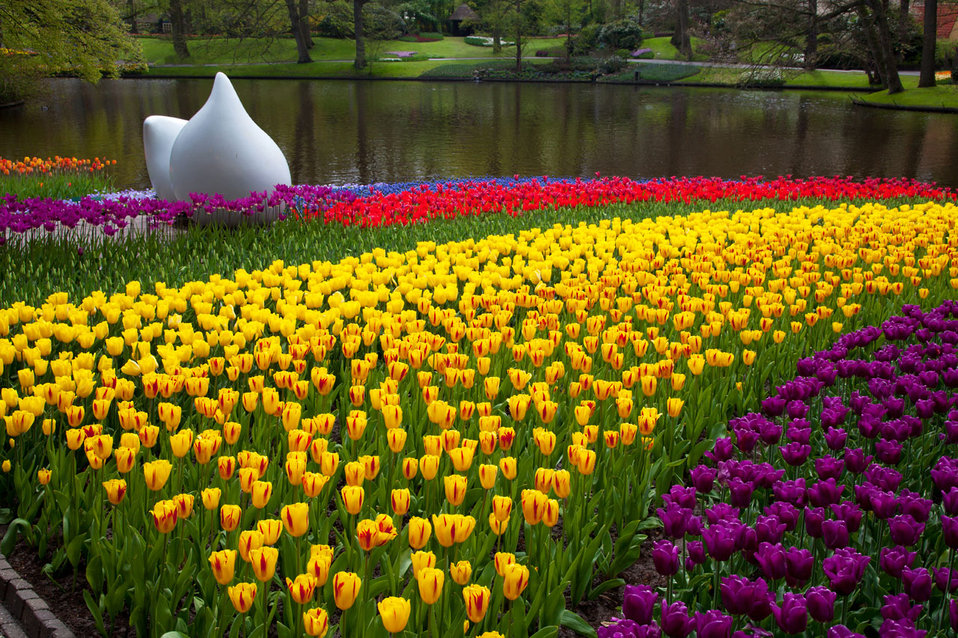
Keukenhof park

Tulip flowers with stone tulip bulbs in keukenhof flower garden.